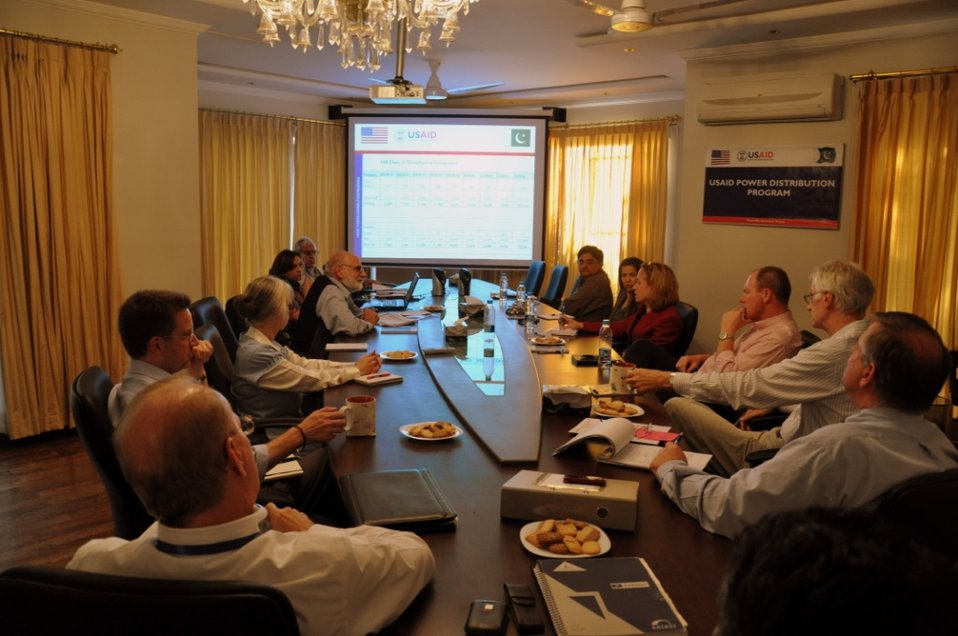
15 Nov - Development of gender strategy for USAID Power Distribution Program

USAID Power Distribution Program as part of its improvement plans for DISCOs has also initiated the improvement of Gender Strategy across all DISCOs with an aim to transform the DISCOs into being viewed as a welcoming environment for women. Following the request from USAID Power Distribution Program, each DISCO nominated a focal person to liaison with USAID Power Distribution Program. The focal persons and their colleagues from 7 DISCOs participated in the first and unique all day consultative meeting held at USAID Power Distribution Program Head Office, Islamabad which was a first ever opportunity of its kind that brought DISCO women together.

The participants identified the gaps in the policies related to gender equity and were provided an opportunity to discuss various gender related issues, covering harassments at work place; identification of the training needs for improving career paths for the female work force of DISCOs; the improvement of work place environment in DISCOs such as adding women's prayer to attract young educated women to opt for employment opportunities, like engineers, revenue and account officers, customer services; HR and administration and other issues pertaining to gender equality in a modern workplace environment.

The workshop focused on the ways to improve DISCO gender policies and practices that will promote DISCOs' image as a better workplace for women staff. Discussions were also held to enhance the contribution of women in improving DISCO’s performance.